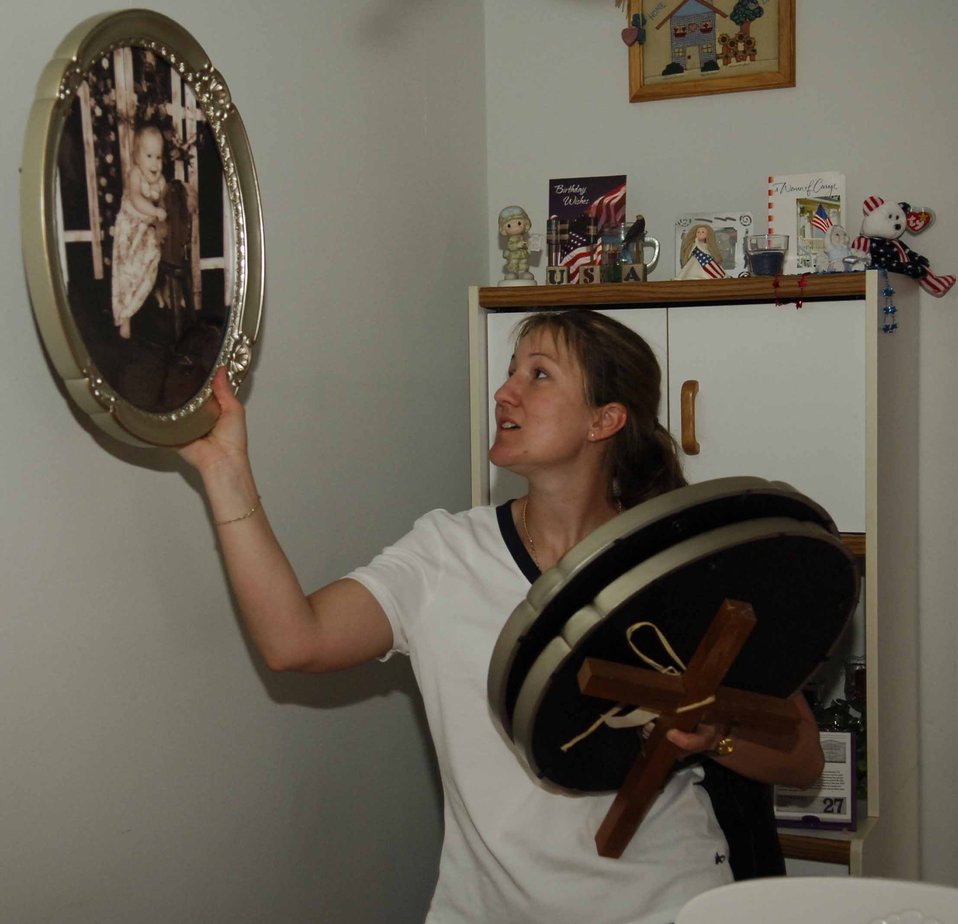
Displaced Airmen return to Keesler AFB for first time after hurricane

D'IBERVILLE, Miss. -- Staff Sgt. Susan Tennant removes photos of her niece and daughter from the walls of her apartment here. Hurricane Katrina tore off half the rooftop and ceiling of her top-floor apartment, but left the items in the room undamaged. Sergeant Tennant is an airman leadership school instructor with the 81st Mission Support Squadron at nearby Keesler Air Force Base.